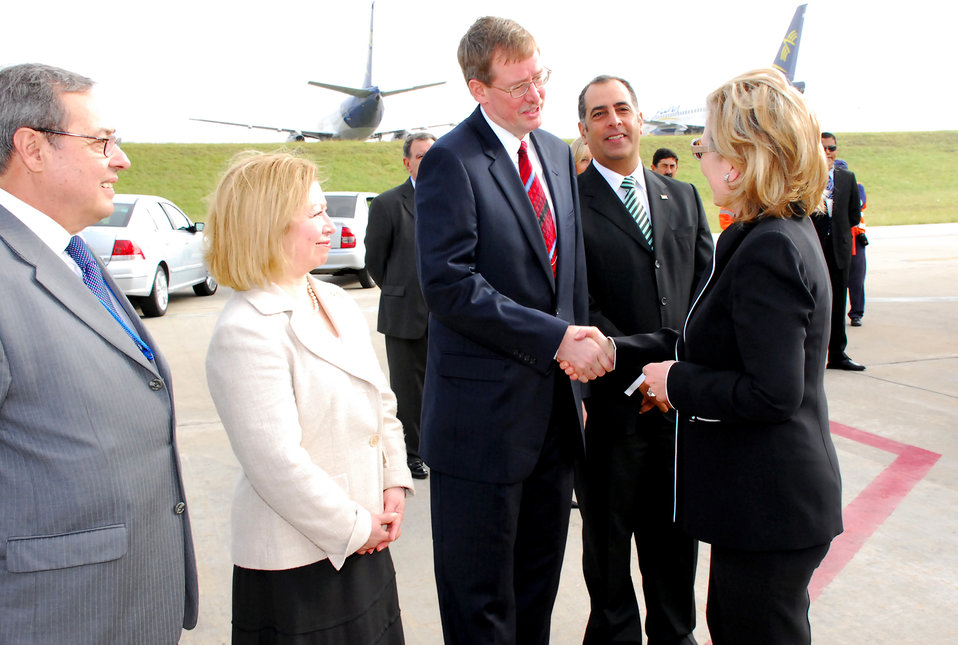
Secretary Clinton Arrives in Montevideo, Uruguay

U.S. Secretary of State Hillary Rodham Clinton arrives in Montevideo, Uruguay March 1, 2010.